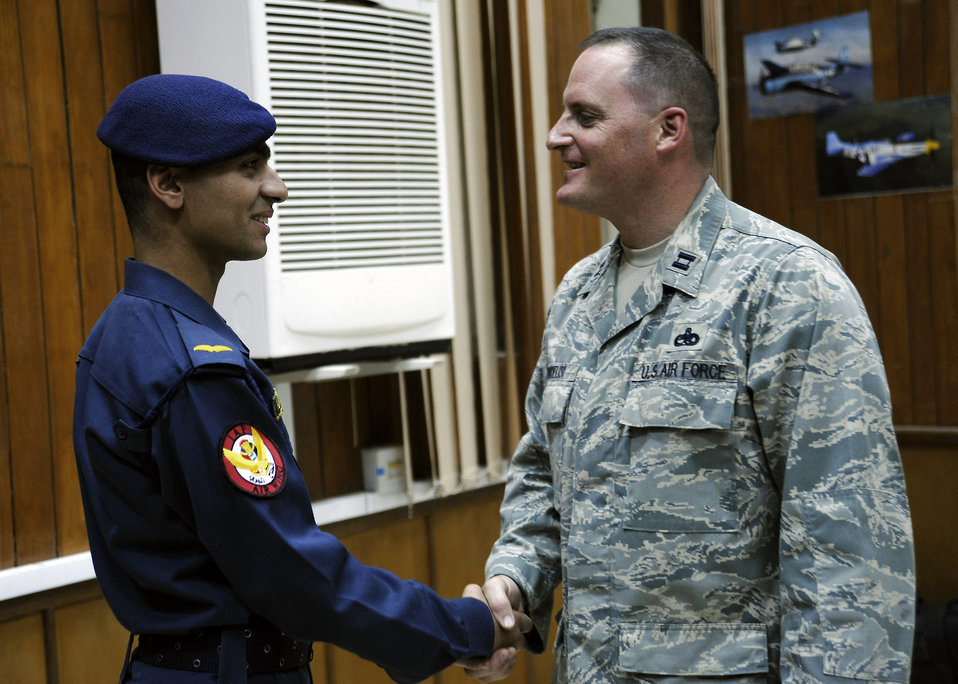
American Airman teaches Iraqi air force cadets

Iraqi air force cadet Ali-Talib thanks Capt. Tom Fiordelisi for the training he received at the Iraqi Military Academy al Rustamiyah in Iraq. Captain Fiordelisi, an air adviser with the 321st Air Expeditionary Training Group, taught courses in English, airpower, followership and leadership for the Iraqi air force training wing.